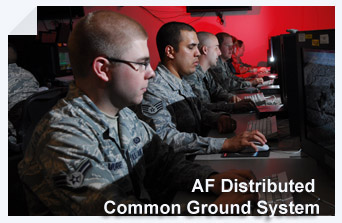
AF Distributed Common Ground System

Imagery analysts with the 30th Intelligence Squadron examine unclassified images provided through the Air Force Distributed Common Ground System weapon system. The Airmen work in the Distributed Ground Station-1 located at the 480th
Intelligence, Surveillance and Reconnaissance Wing at Langley Air Force Base,
Va.